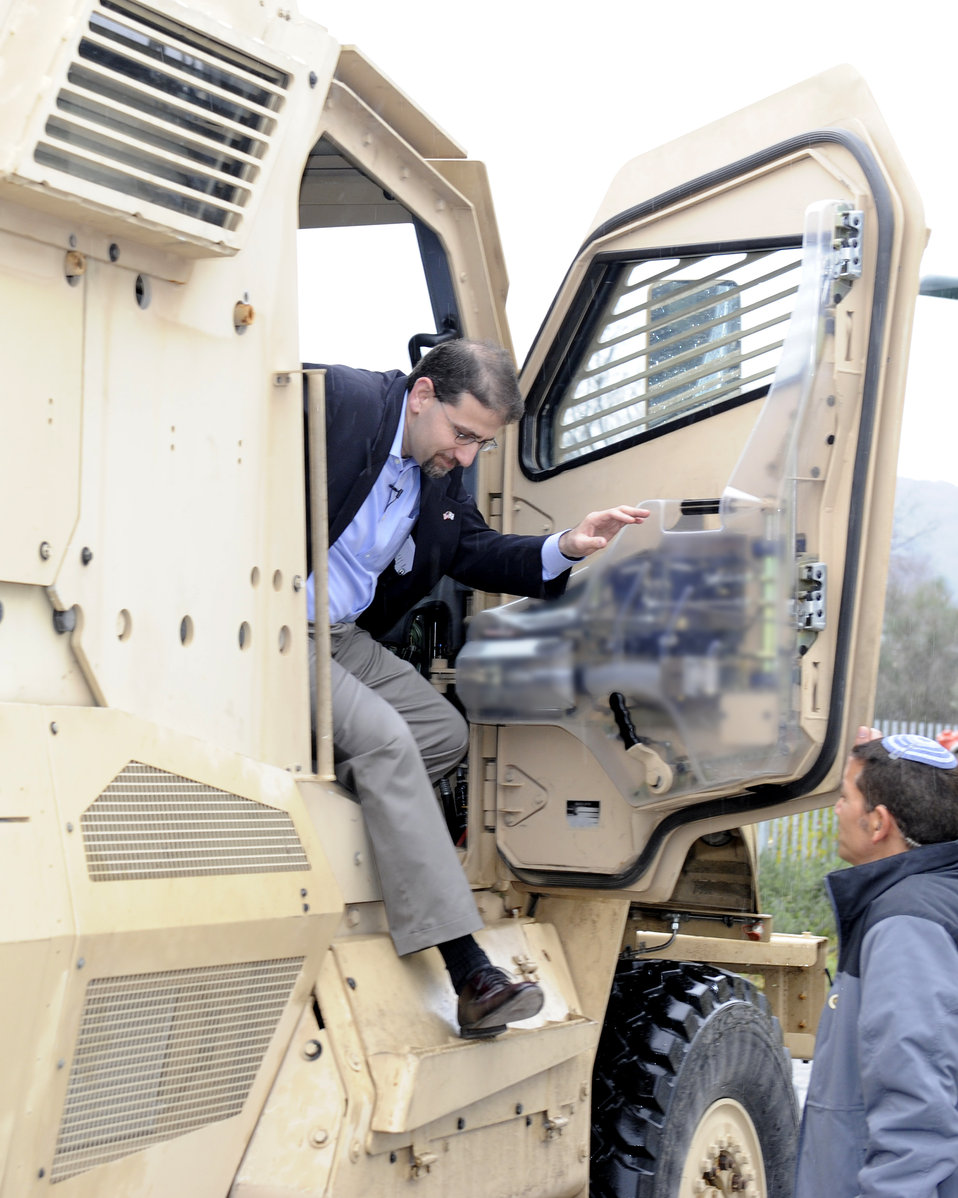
Ambassador Shapiro Visits the Kibbutz Sasa

U.S. Ambassador to Israel Daniel Shapiro visits the Kibbutz Sasa, home to the Plasan factory, in northern Israel on January 30, 2012. The Ambassador saw the full range of products, from reactive armor, to purpose built vehicles, to body armor. Plasan has delivered more than 8,000 armor kits to U.S units on active duty.